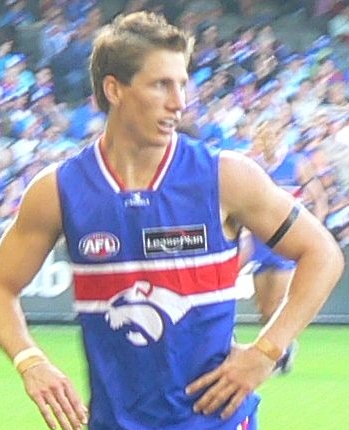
Dale Morris, Australian Rules Footballer